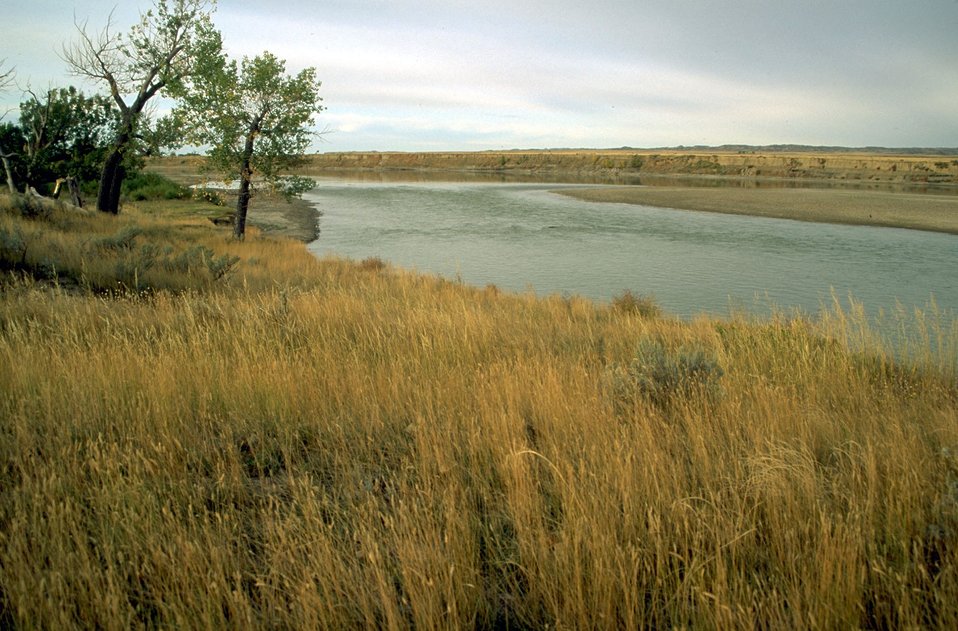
Tall grass along the banks of the Yellowstone River